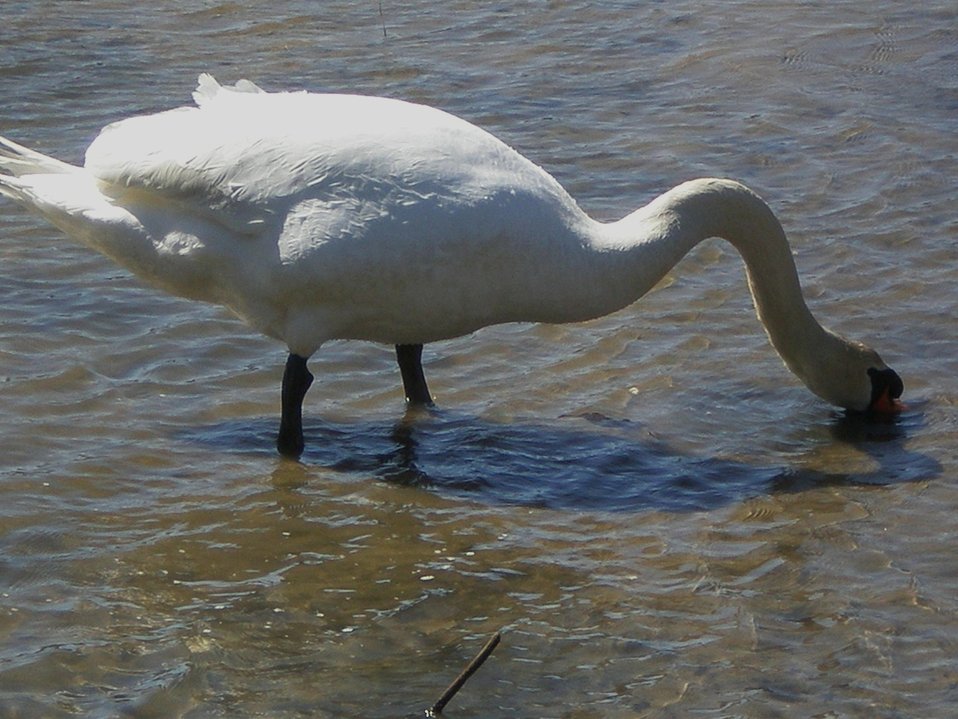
A mute swan (Cygnus olor) foraging. The mute swan is an invasive species that is considered one of Chesapeake Bay's most harmful species as they edge out other waterfowl and destroy aquatic vegetation.